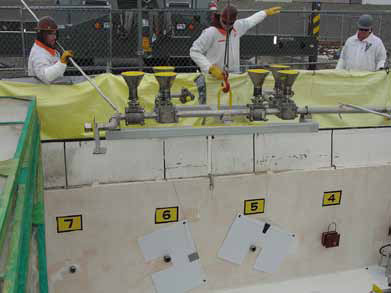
The Recovery Act-funded upgrades to eight Hanford valve pits are now complete, improving safety and operations in the tank farms.

In three pits, workers completely replaced deteriorating equipment in the pits with new rigid-pipe jumpers to help ensure a leak-free transfer of waste between tanks. The upgrades, which improve conduct of operations and equipment reliability, are vital to 242-A Evaporator campaigns, single-shell tank retrievals, double-shell tank to double-shell tank transfers, and waste feed delivery to the Waste Treatment Plant.